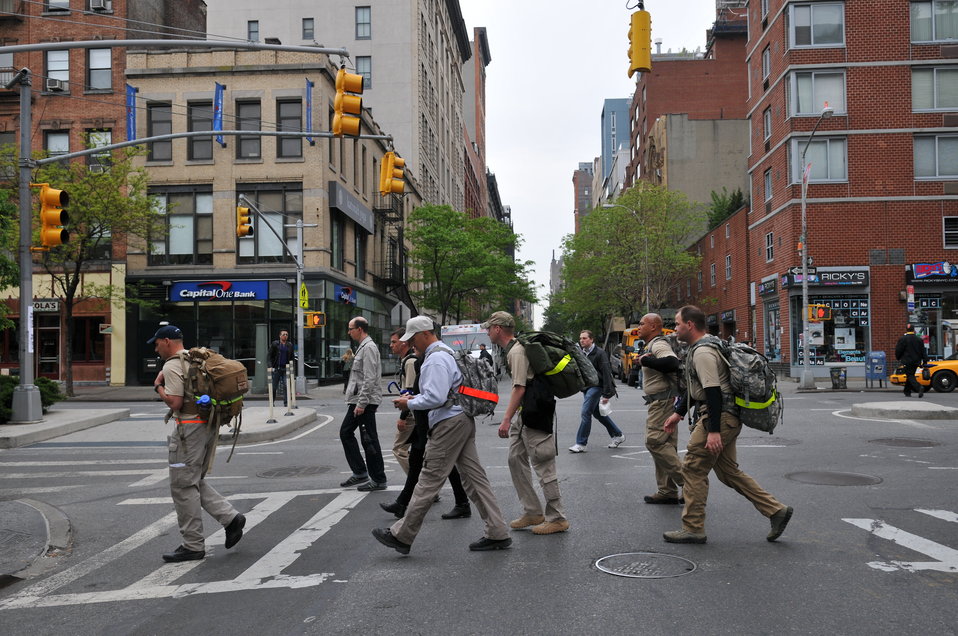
Airmen remember fallen air advisors

Team 1 makes their way thru New York City during the Air Advisor Memorial Ruck March, a 90-mile relay from the World Trade Center to Joint Base McGuire-Dix-Lakhurst, N.J., April 26, 2012. Each ruck team member carried a paver stone with a name of one of the nine who were killed April 27, 2011, in Kabul, Afghanistan. The stones were placed at the Air Advisor Memorial at JB McGuire at the end of the march April 27.